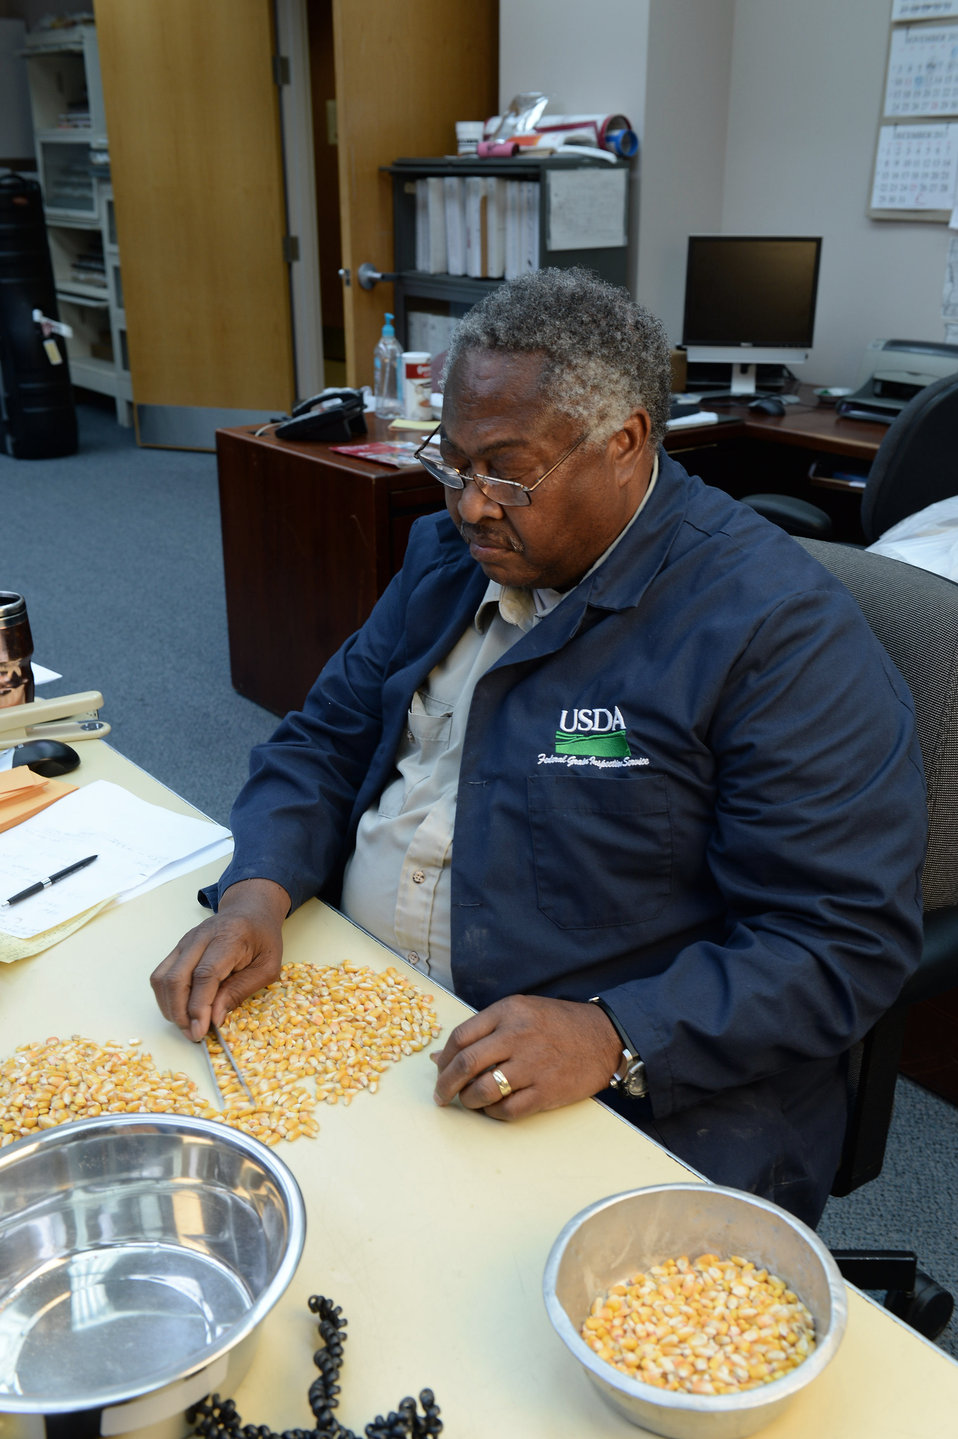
A U.S. Department of Agriculture (USDA) Grain Inspection, Packers and Stockyards Administration (GIPSA) Federal Grain Inspection Service (FGIS) scientist tests corn at the FGIS inspection laboratory in New Orleans, LA on Monday, Nov. 18, 2013.